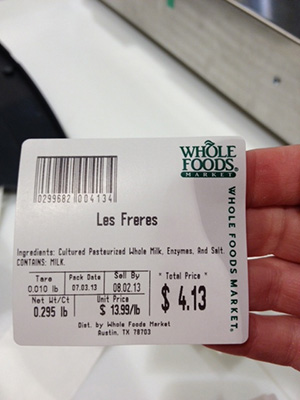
RECALLED – Cheese

July 5, 2013 – Product Recall – Whole Foods Market recalls cheese because of possible health risk.